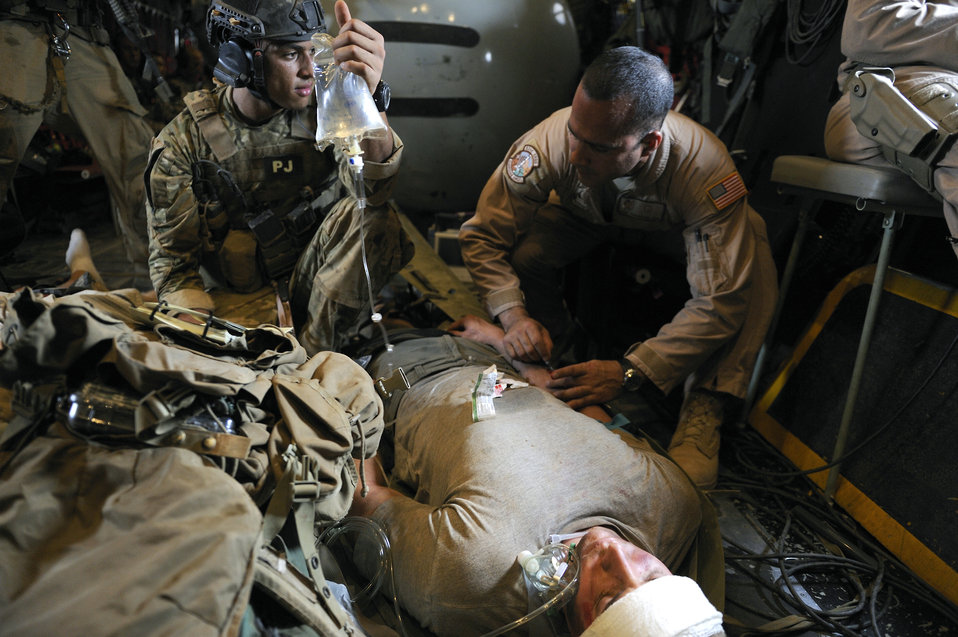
Fluid replenishment

During a training exercise, Airmen from the 82nd Expeditionary Rescue Squadron evaluate a patient July 28, 2010, at Chebelly Airfield, Djibouti. The 81st ERQS, 82nd ERQS, 2nd Battalion-137th Infantry Regiment and the Heavy Marine Helicopter 461 conducted the recovery personnel training in support of Combined Joint Task Force-Horn of Africa missions.